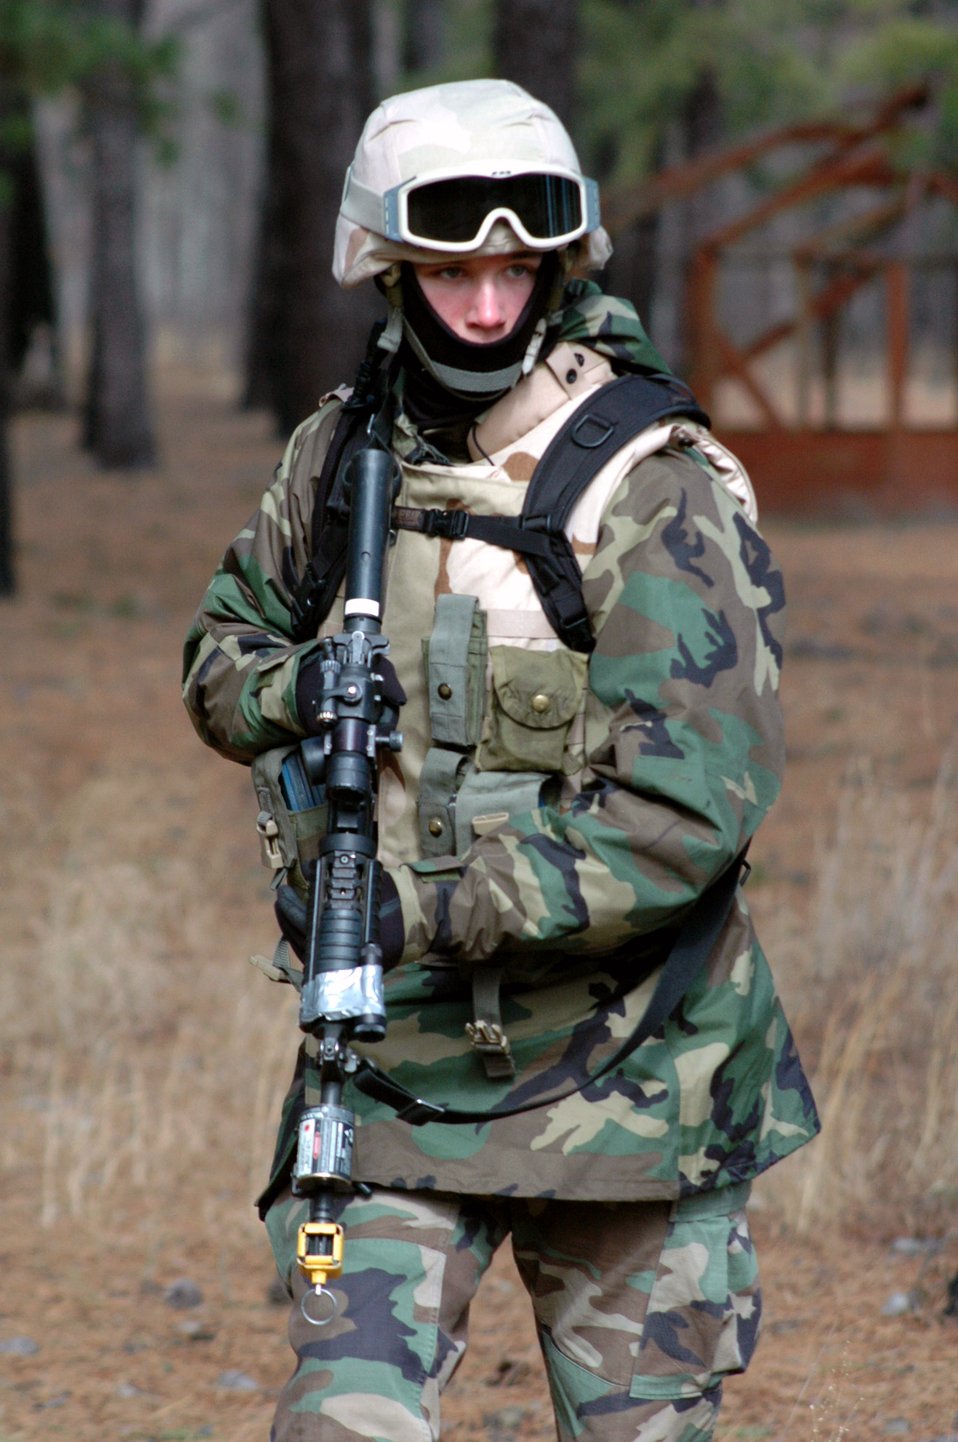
Warrior training

Airman 1st Class Justin Trammel practices a dismounted patrol scenario during training Feb. 20 on a range at Fort Dix, N.J. The course is taught by members of the Air Force Expeditionary Center's Expeditionary Operations School and 421st Combat Training Squadron and the course prepares security forces Airmen for upcoming deployments. Airman Trammel is assigned to the 569th U.S. Forces Police Squadron from Vogelweh Air Base, Germany, and is a student in the Air Force Phoenix Warrior Training Course 08-3.